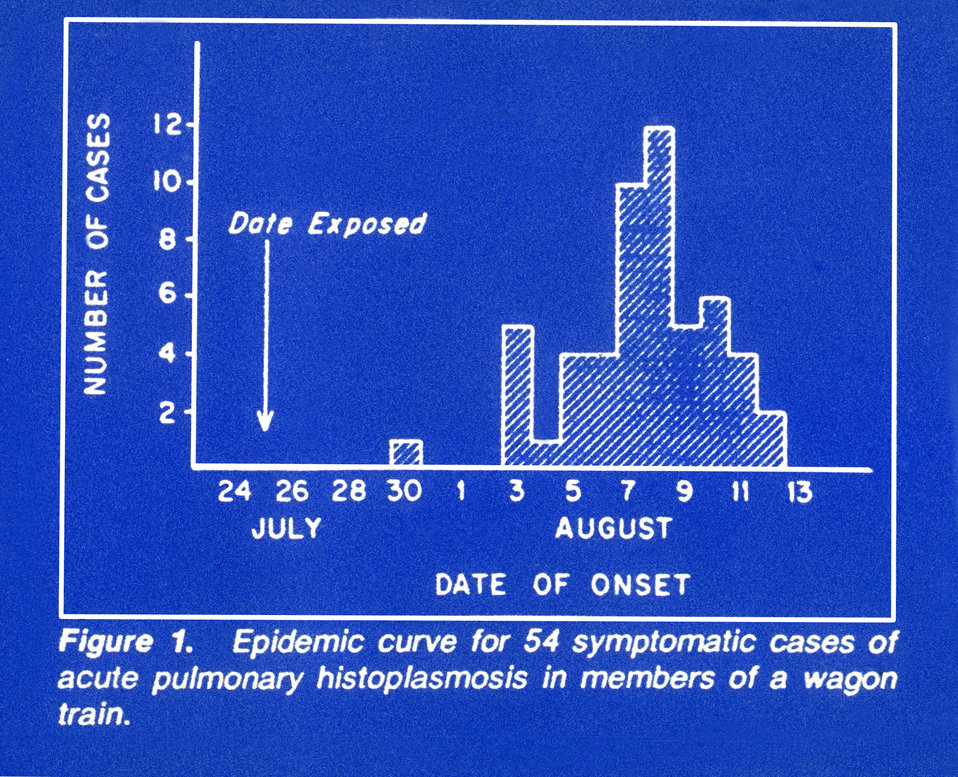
Epidemic curve for 54 symptomatic cases of acute pulmonary histoplasmosis in members of a wagon train.